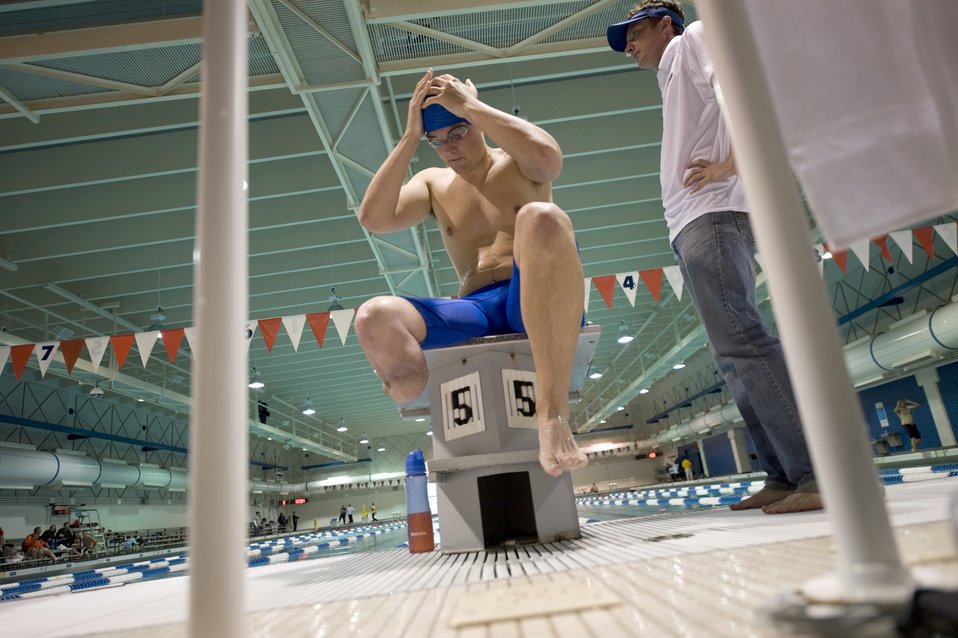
Warrior Games swim practice

Second Lt. Ryan McGuire prepares to dive off the starting block during swim practice May 11, 2010, at the Olympic Training Center in Colorado Springs, Colo.